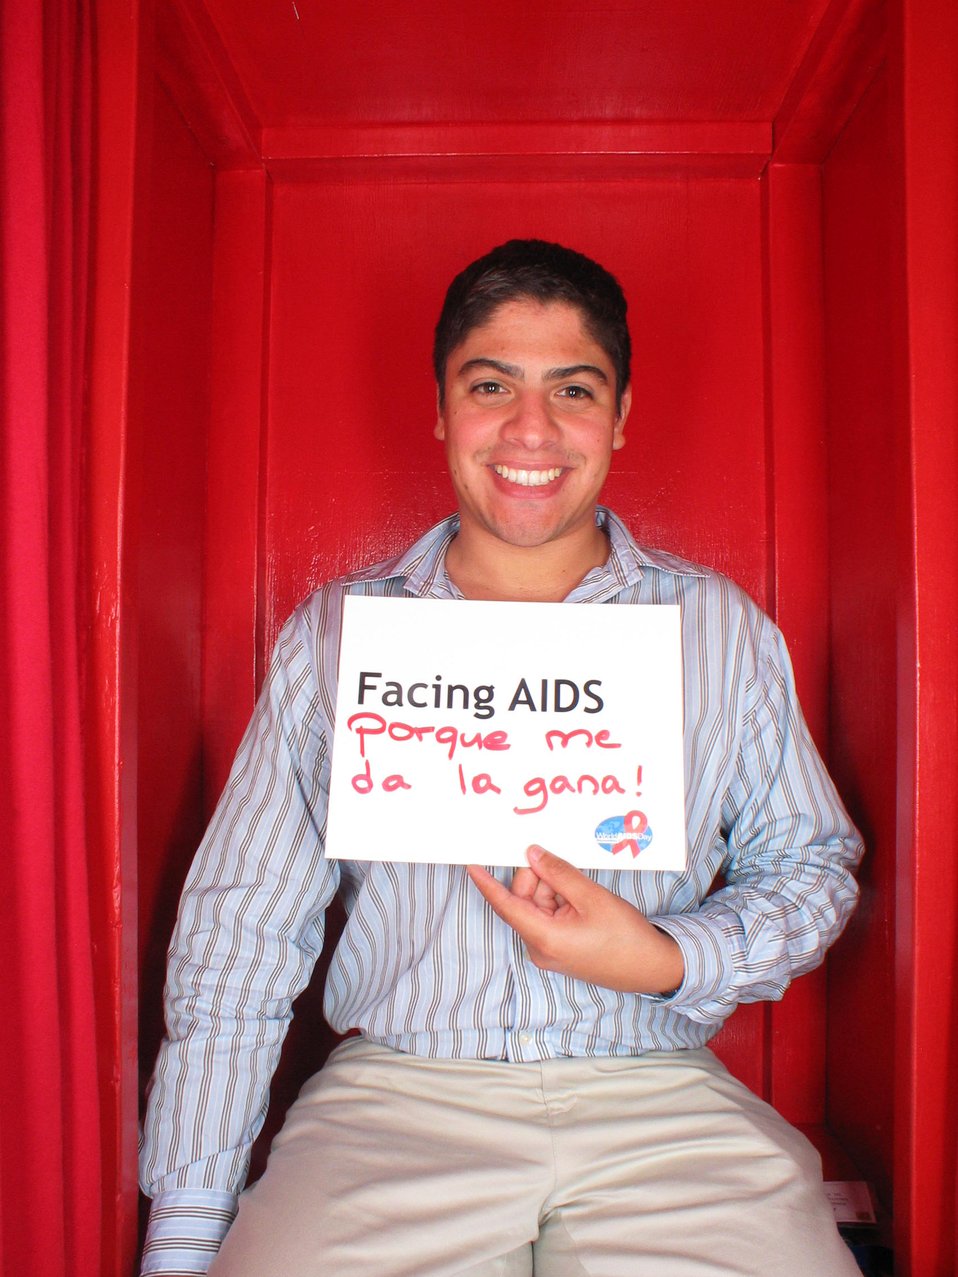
Facing AIDS porque me da la gana!